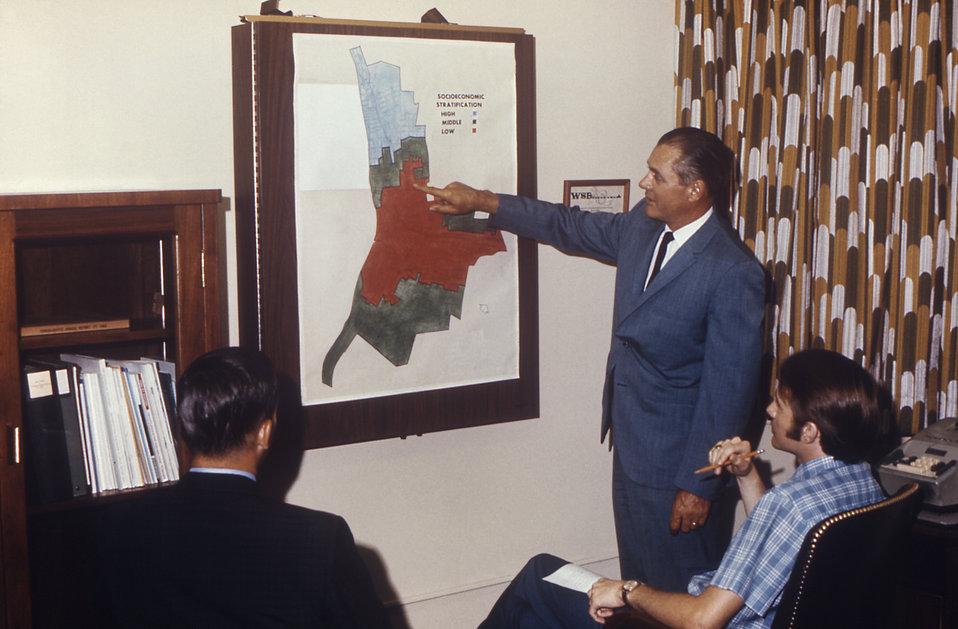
This image depicts three public health personnel, which included a Supervisory Sanitarian instructing two employees in the methodology associated with proper implementation of sanitary prodcedures in a community composed of varying socioeconomic groups.